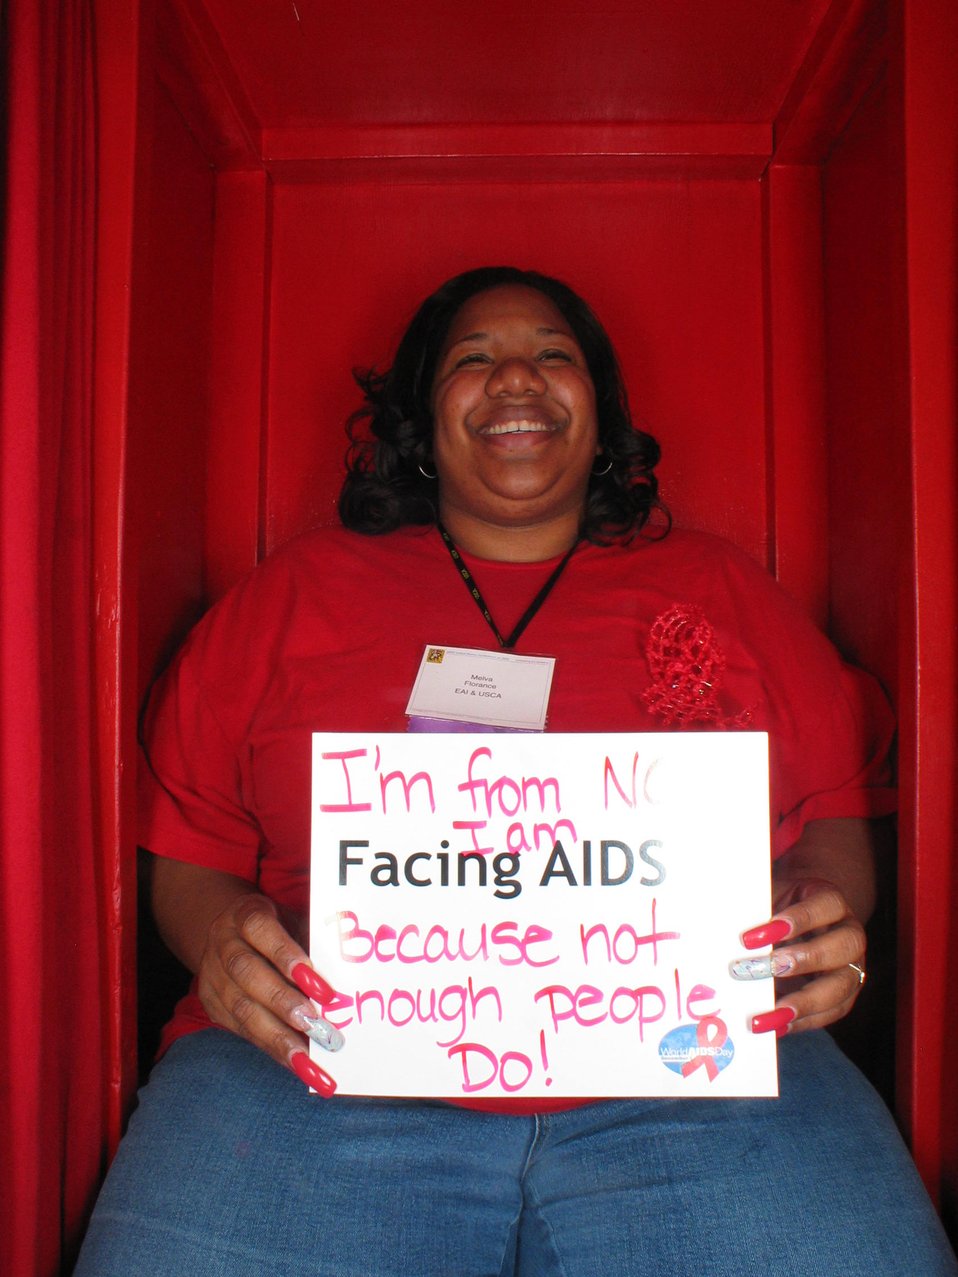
I am Facing AIDS because not enough people do!